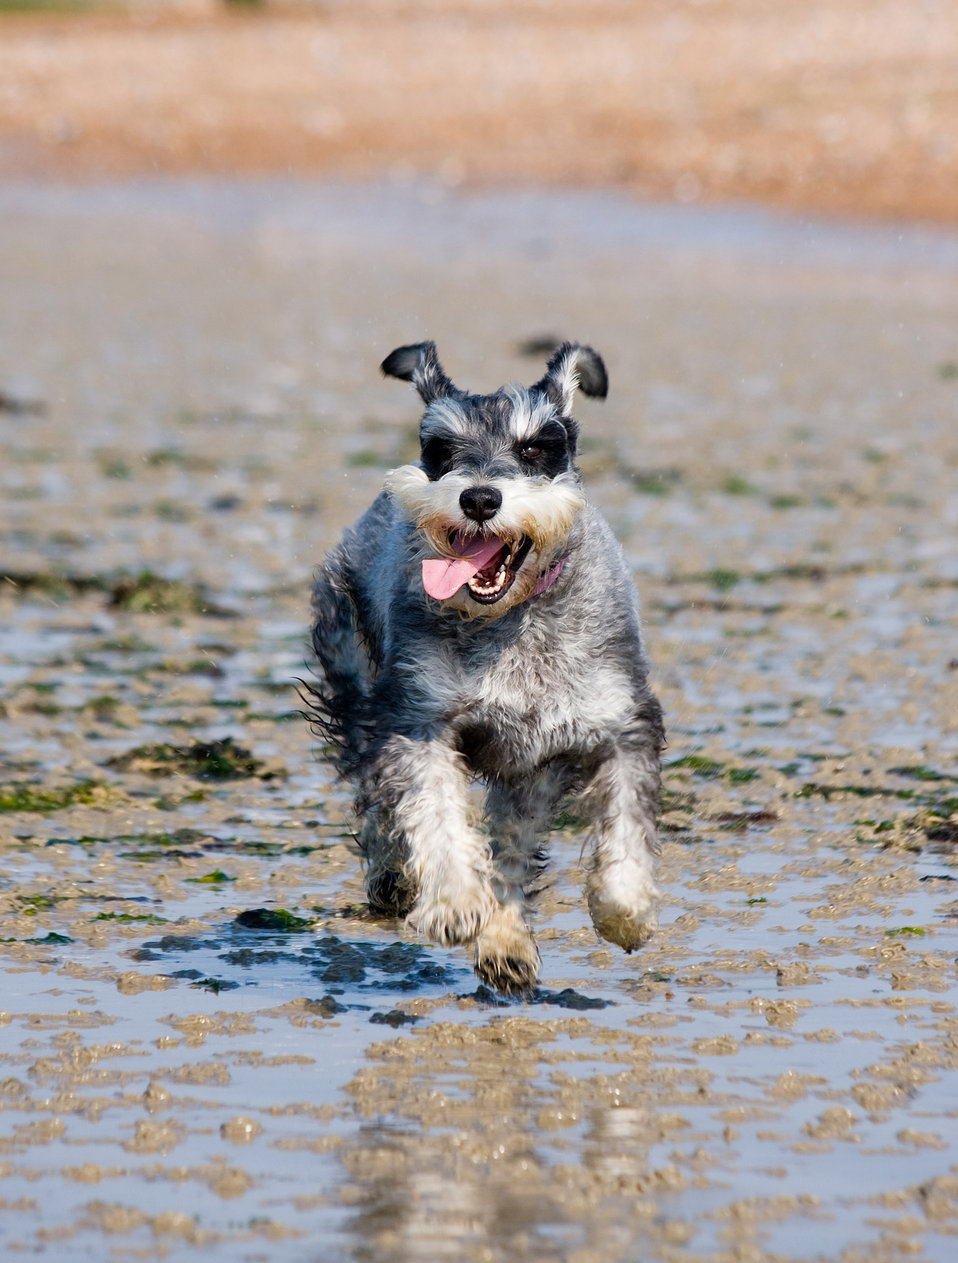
Dog running on beach

Happy and excited miniature schnauzer dog running on the beach.